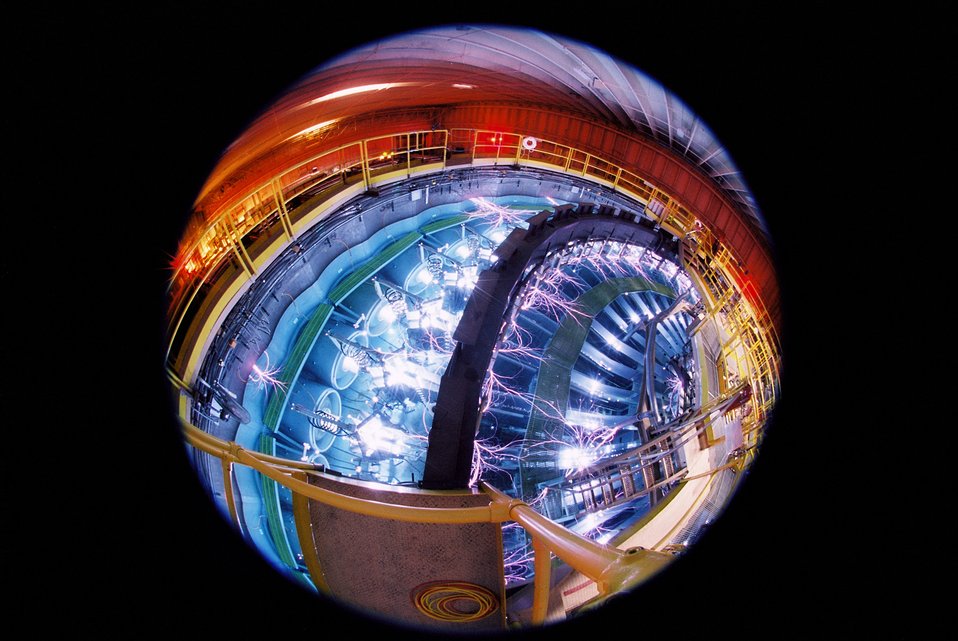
Saturn, Sandia's pulsed power machine, delivers hard radiation during one of it's milestone shorts.
The scarcity of jagged, lightning-like arching between different water/metal interfaces means that the machine's water insulation is effective and that relatively much of its electrical pulse is traveling on its intended path from the machine's circular exterior to its central target.